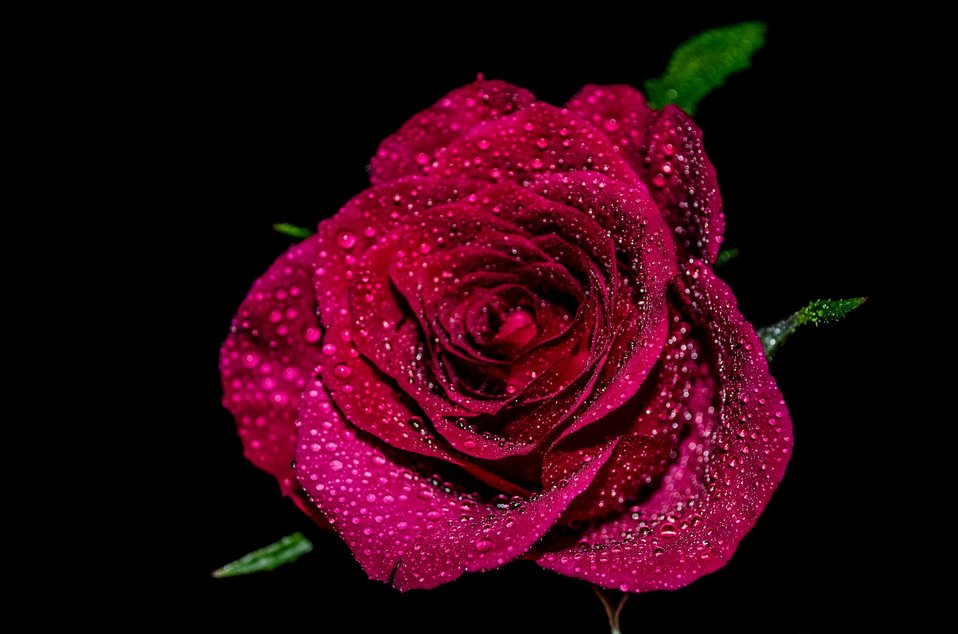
Flower and water drops.